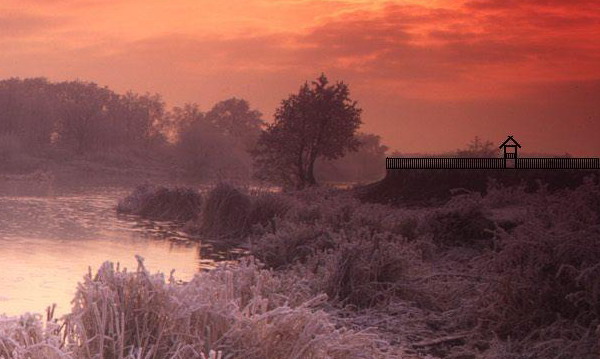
eigene Rekonstruktion von der slawischen Burg auf dem Bacherswall in der Lieps.